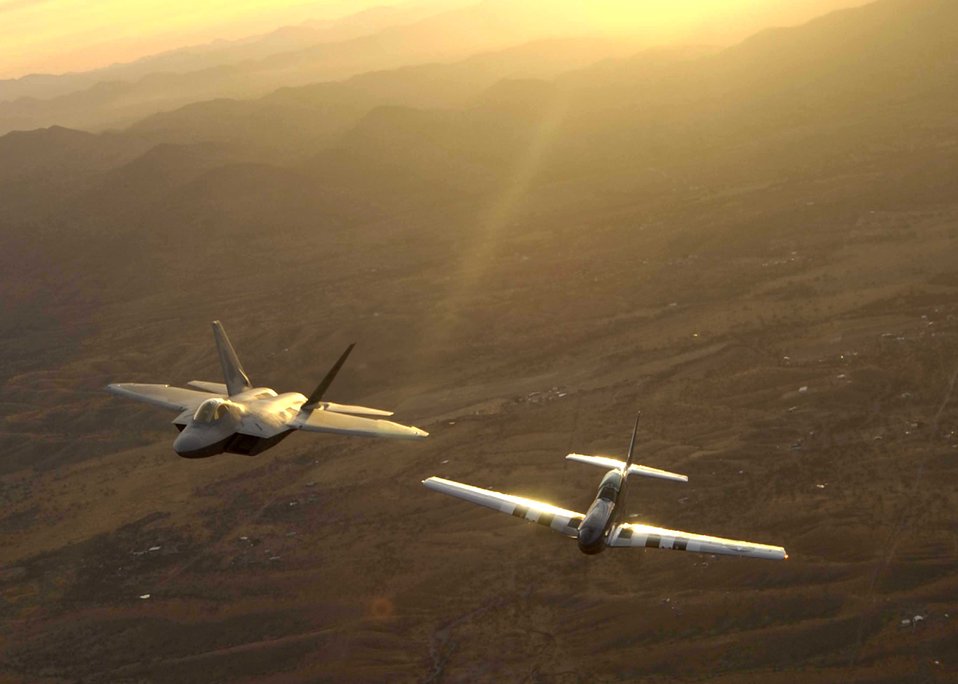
Heritage flight

An F-22A Raptor and a World War II-era P-51 Mustang fly over Tucson, Ariz., Sunday, March 5, 2006, during the 2006 Heritage Conference. The conference combines different U.S. aircraft from more than 60 years of aviation history to ensure certification in performing air shows worldwide.